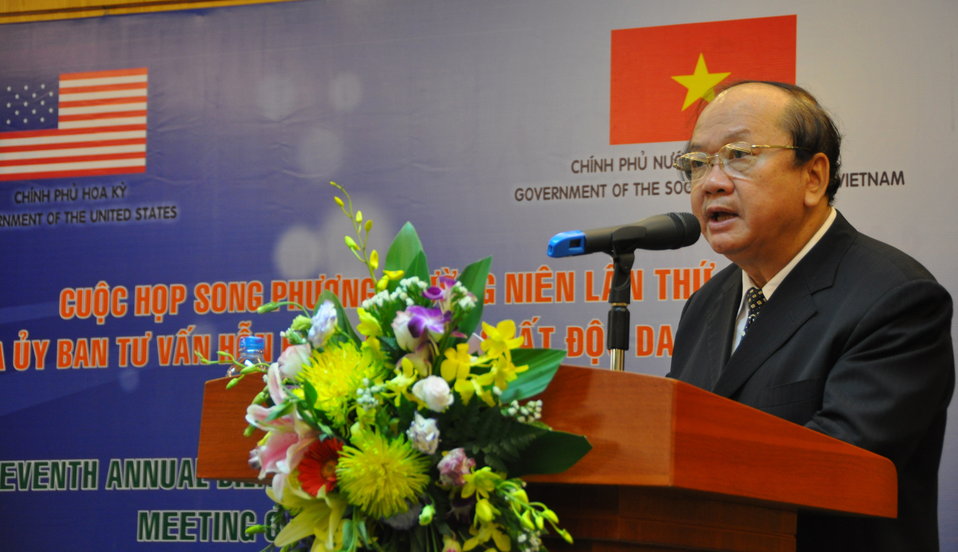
Deputy Minister Bui Cach Tuyen, Ministry of Natural Resources and Environment at the Seventh U.S.-Vietnam Advisory Committee Meeting (JAC)

Hanoi, September 20, 2012